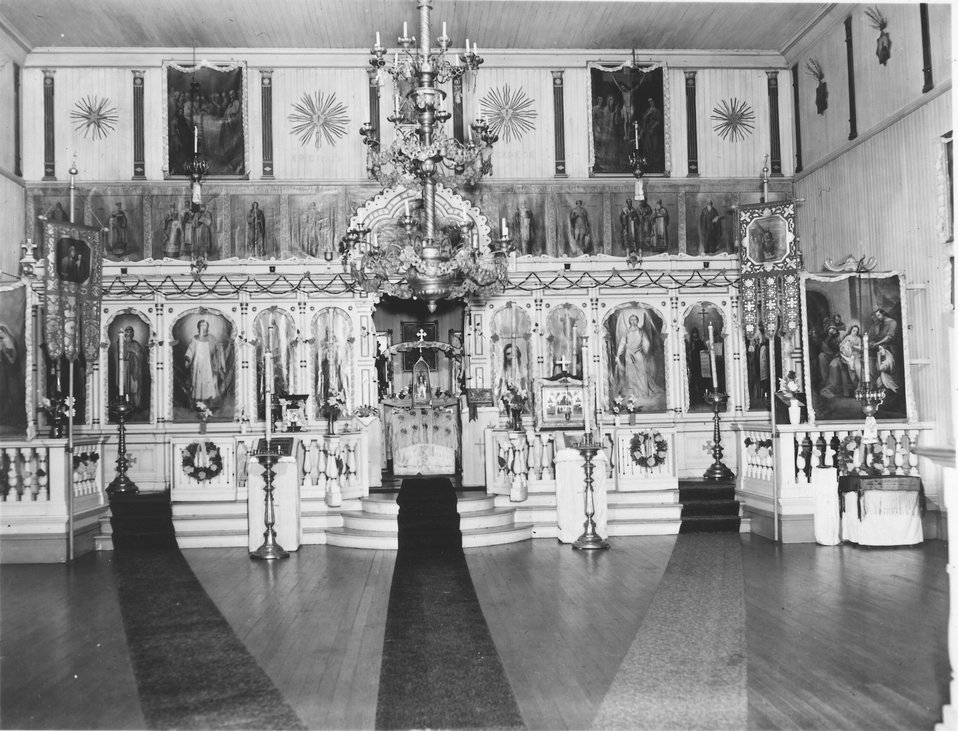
Interior of Russian Orthodox Church at Dutch Harbor.